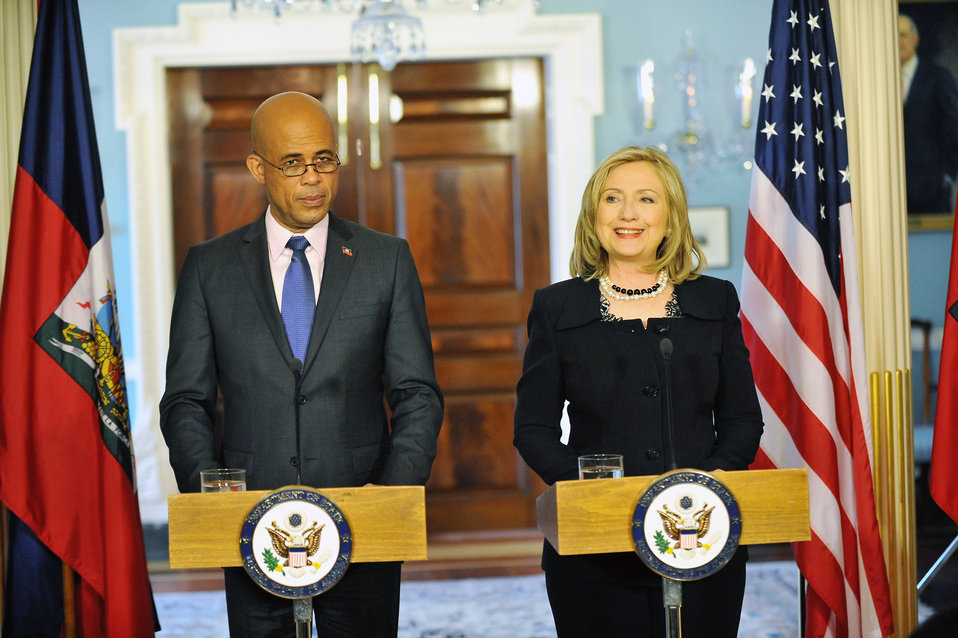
Secretary Clinton and Haitian President-Elect Martelly Hold a Joint Press Conference

U.S. Secretary of State Hillary Rodham Clinton holds a joint press conference with Haitian President-elect Michel Martelly, at the U.S. Department of State in Washington, D.C., on April 20, 2011.